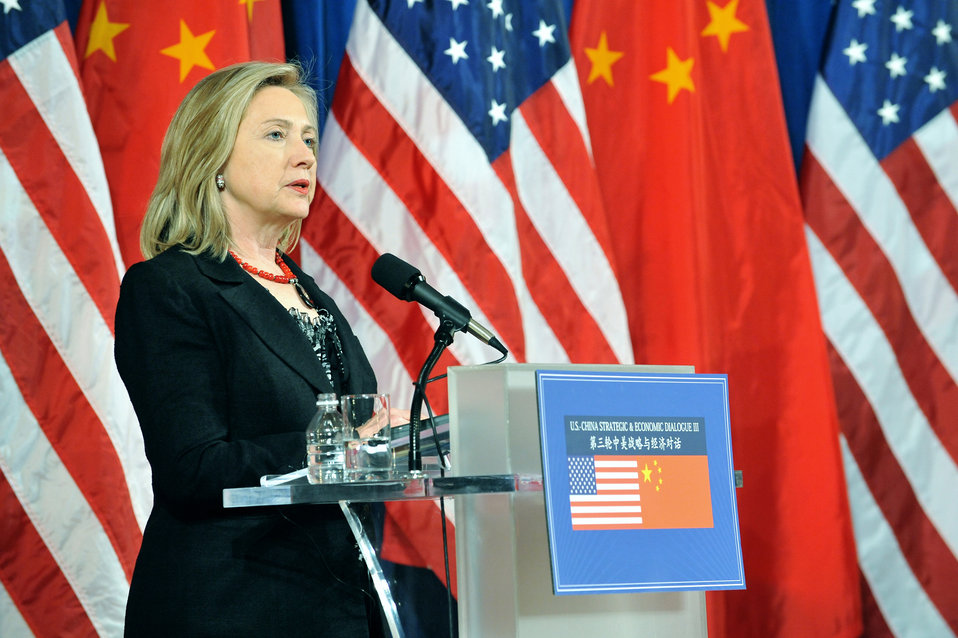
Secretary Clinton Delivers Remarks

U.S. Secretary of State Hillary Rodham Clinton delivers remarks at a joint press availability she held with U.S. Secretary of the Treasury Timothy Geithner, in the U.S. Department of the Interior’s Sidney R. Yates Auditorium in Washington, D.C., on May 10, 2011.